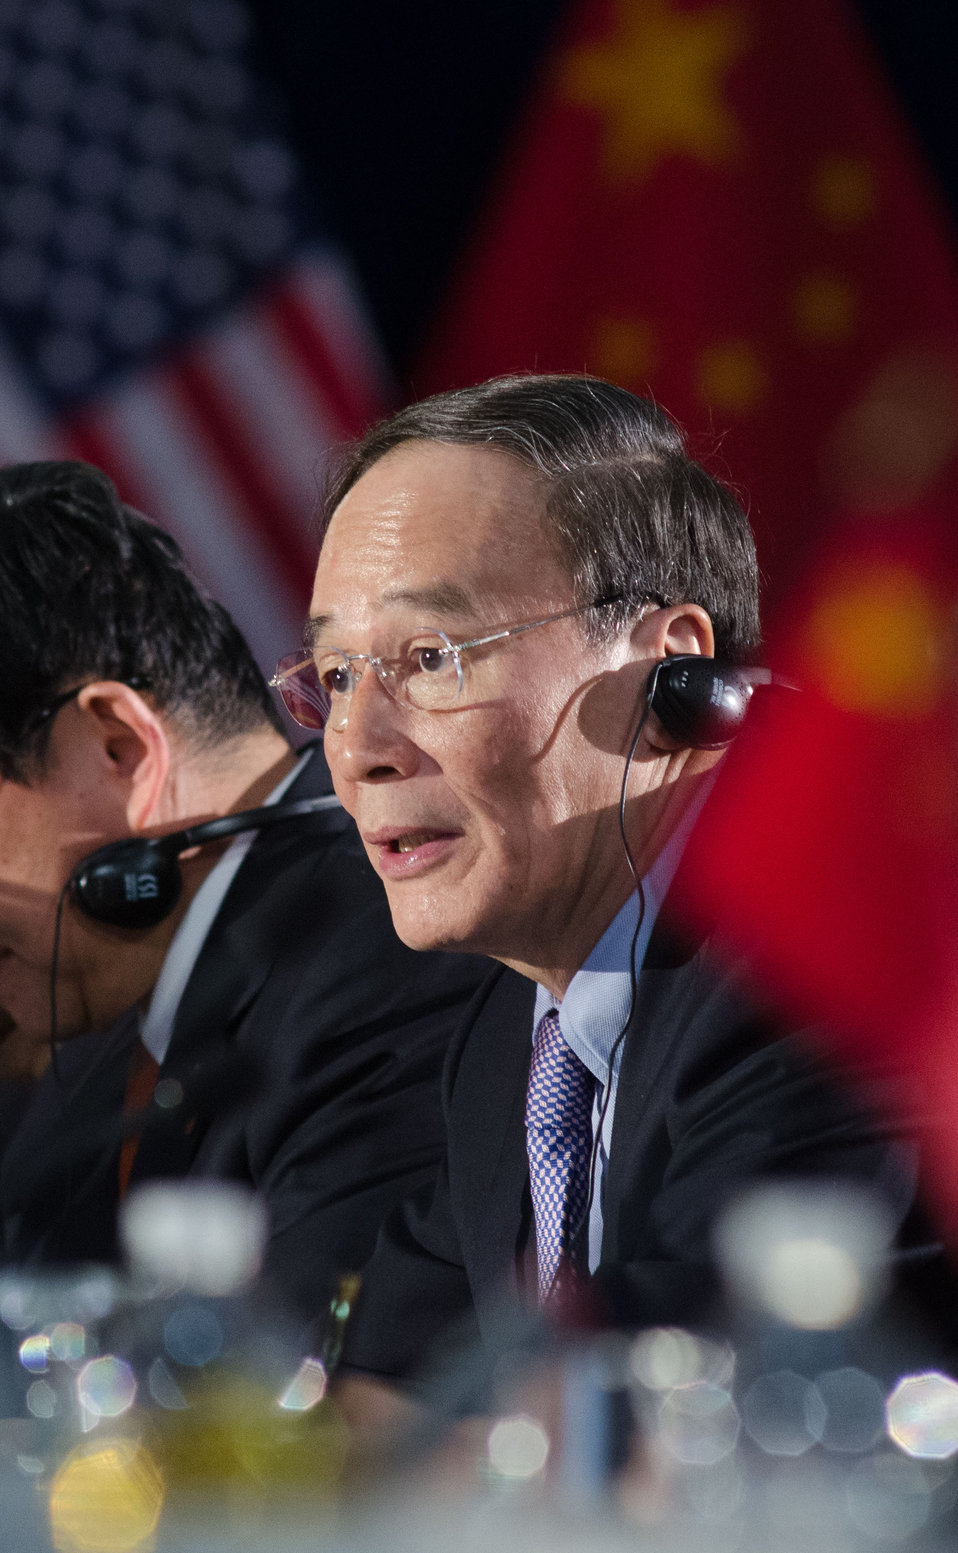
Chinese Vice Premier Wang Qishan gives his opening speech to the 23rd Session of the U.S. China Joint Commission on Commerce and Trade (JCCT) at the Andrew W. Mellon Auditorium in Washington, D.C. on Wednesday, Dec. 19, 2012. The JCCT holds high-level plenary meetings on an annual basis to review progress made by working groups that focus on a wide variety of trade issues. These working groups meet throughout the year to address topics such as intellectual property rights, agriculture, pharmaceuticals and medical devices, information technology, tourism, commercial law, environment, and statistics. Established in 1983, the JCCT is the main forum for addressing bilateral trade issues and promoting commercial opportunities between the United States and China. The 2011 JCCT meeting was held in Chengdu, China, where China agreed, among other issues, to improve intellectual property enforcement, delink innovation policies to government procurement preferences, and provide a fair and level playing field in China’s Strategic Emerging Industries.